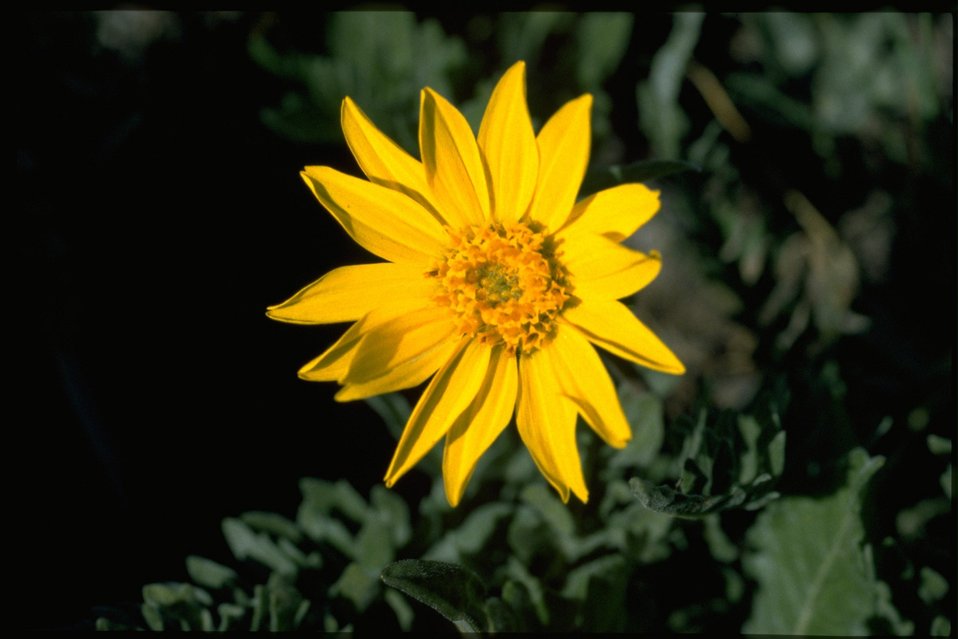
Closeup shot of Hooker's Balsamroot wildflower (Balsamorhiza Hookeri).